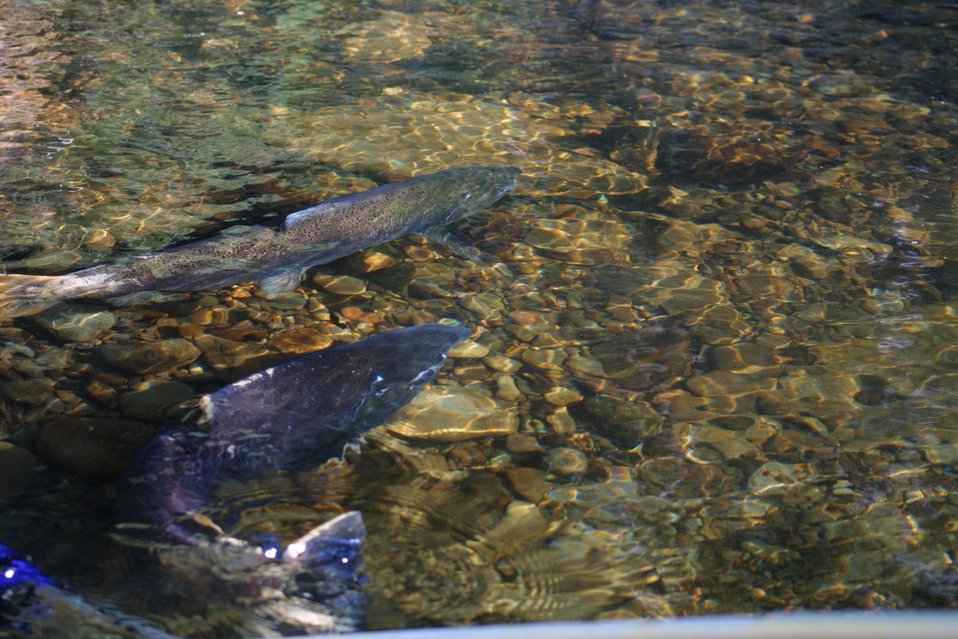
Adult Chinook Salmon spawning in Upper Tioga Creek, 11/8/01. Gravel bar created by boulder weir constructed to improve habitat.